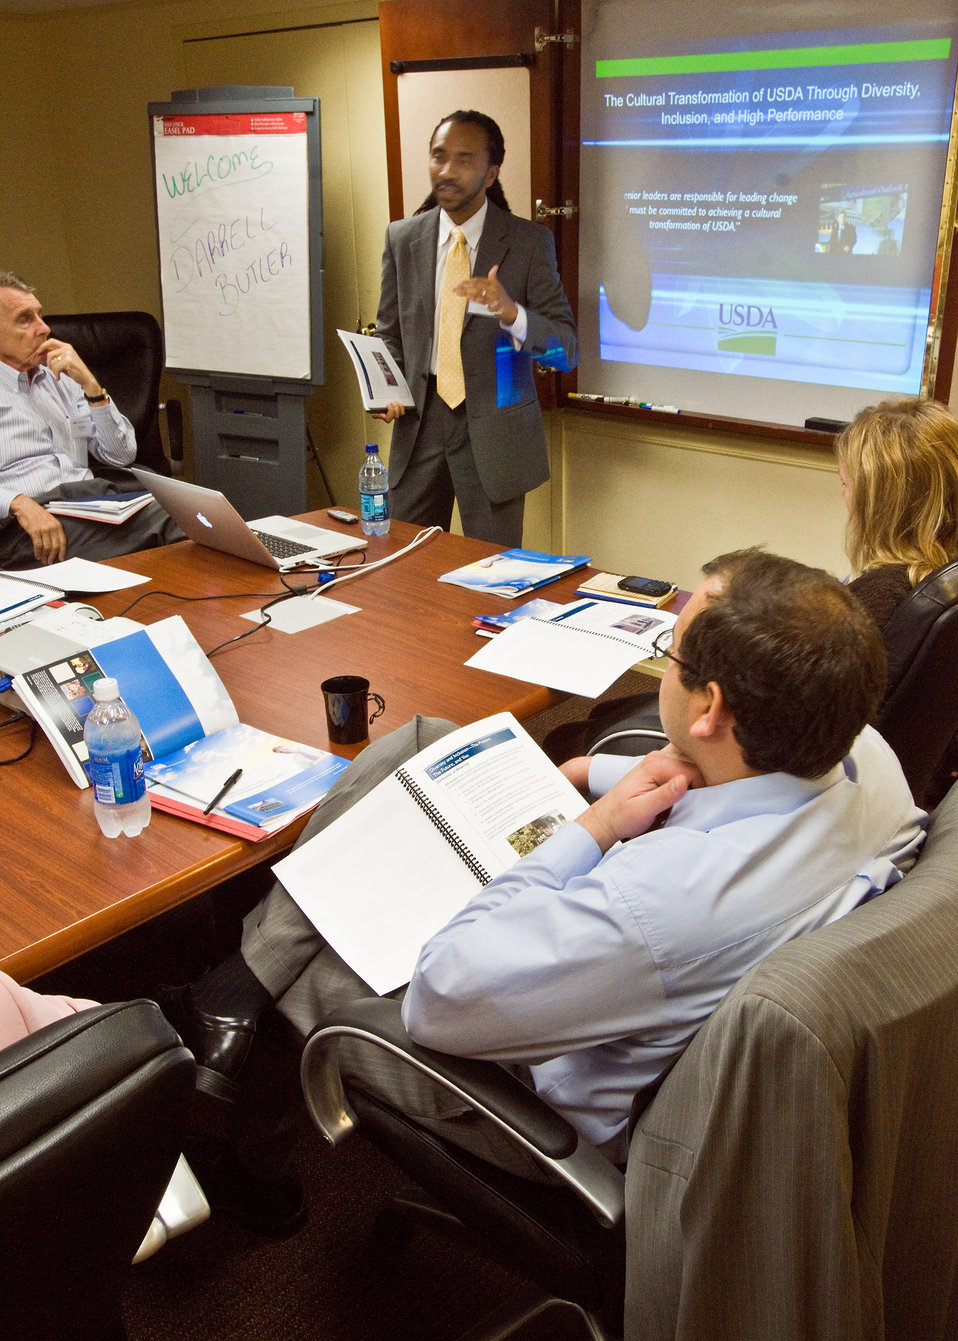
Darrell Butler, Innovations International facilitates a meeting of Department of Agriculture employees during a session of the Secretary's Transformational Training in Washington, DC, Wednesday, September, 15, 2010. The transformational training is for Department of Agriculture executives, managers and employees to help improve the civil rights of clients and employees. USDA Photo 10di1492-18 by Bob Nichols.